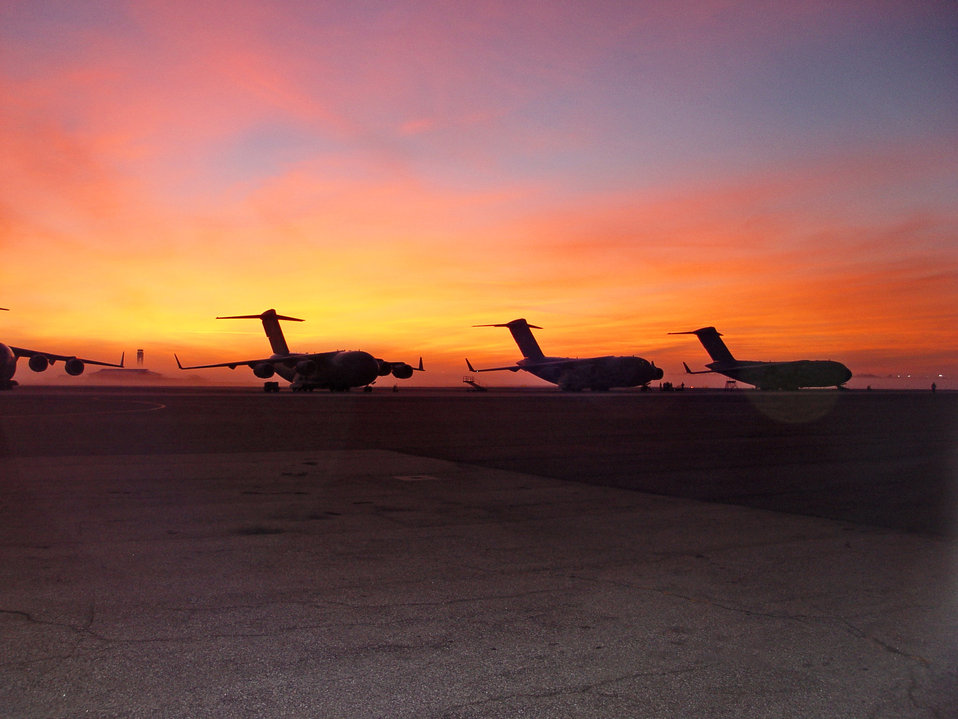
By the dawn's early light

CHARLESTON AIR FORCE BASE, S.C. -- In the early morning fog, C-17 Globemaster IIIs line the runway here waiting for the next mission.